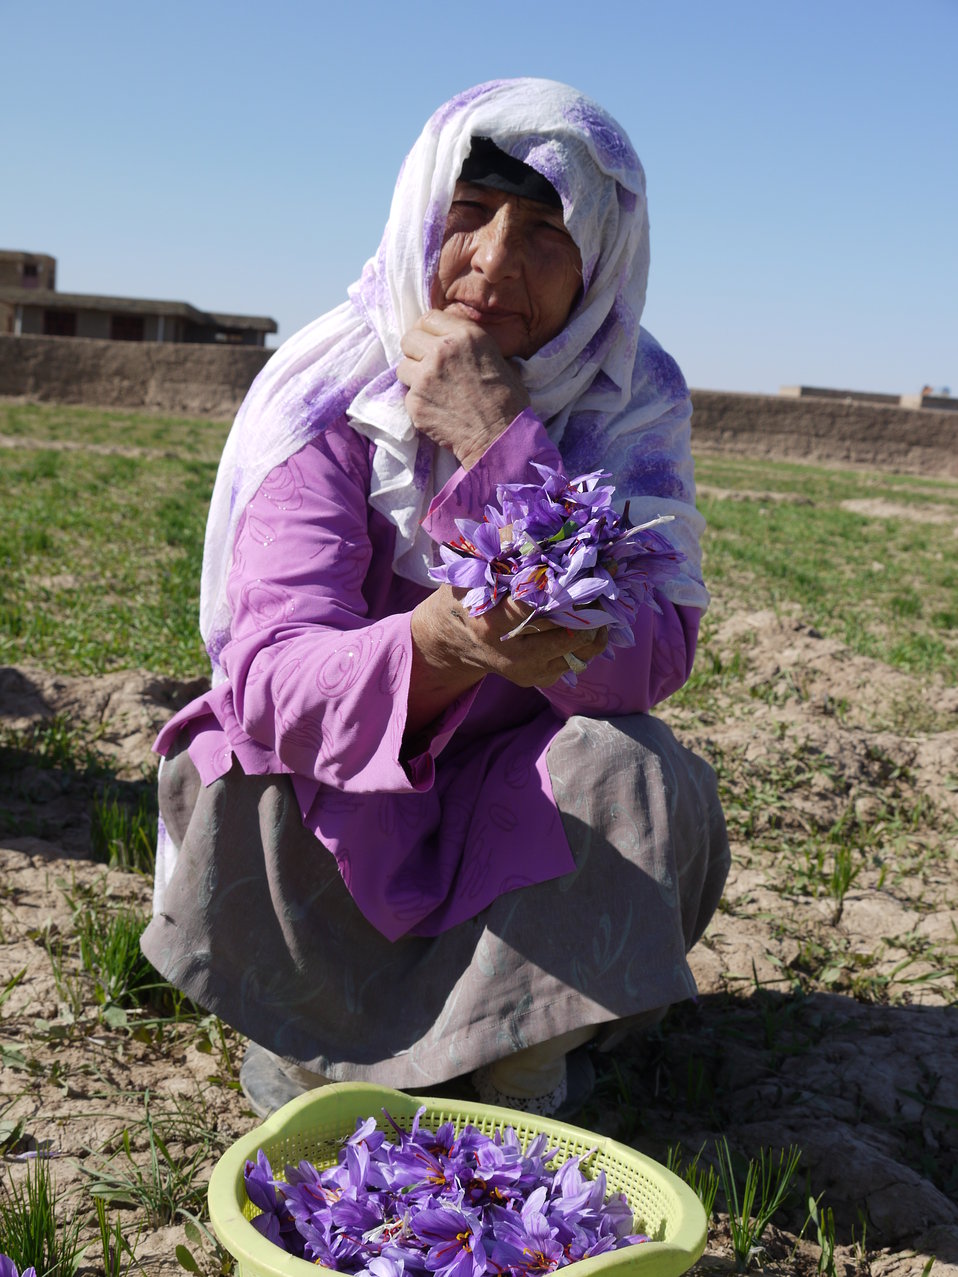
Ghoryan Women Saffron Association

Firoza is one of 117 members of the Ghoryan Women Saffron Association in Herat province. Firoza and her fellow members received a USAID–funded loan which gave them access to fertilizers, pesticides, and harvest baskets. This allowed the saffron growers to increase productivity and product quality. The Agricultural Development Fund, which provided the loan, was established with a $100 million grant from USAID to the Ministry of Agriculture, Irrigation and Livestock (MAIL).